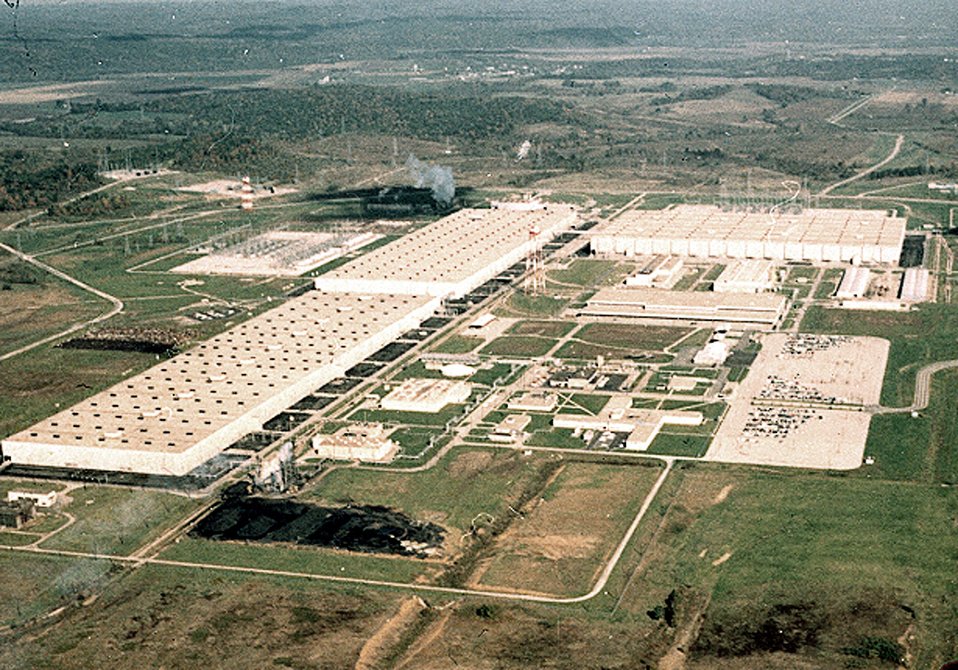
Portsmouth Gaseous Diffusion Plant. 10-16.70.